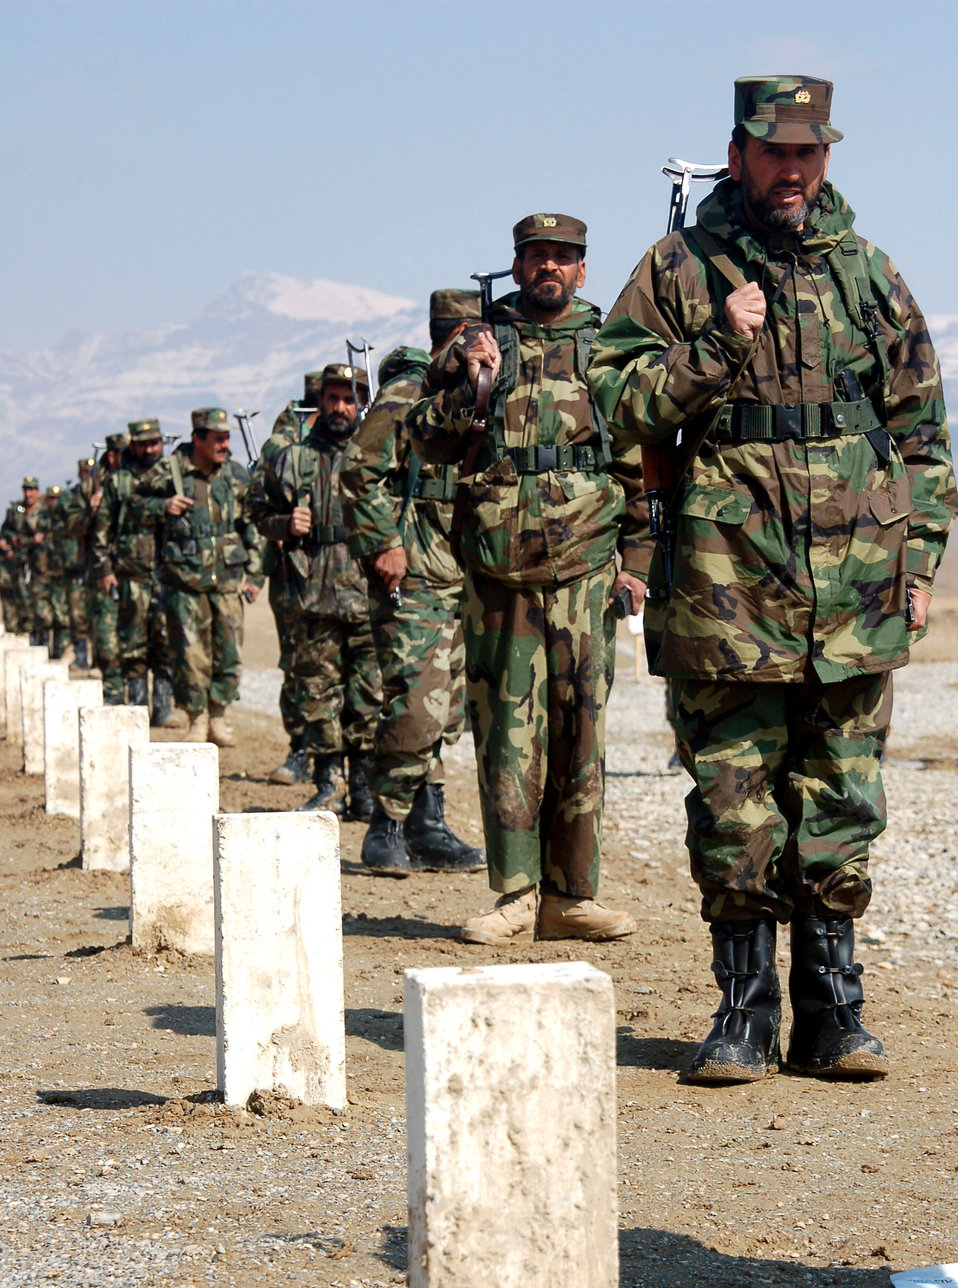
At home on the range

Afghan National Army soldiers line up at firing positions March 14 on a range at the Kabul National Military Center in preparation for a live-fire drill.